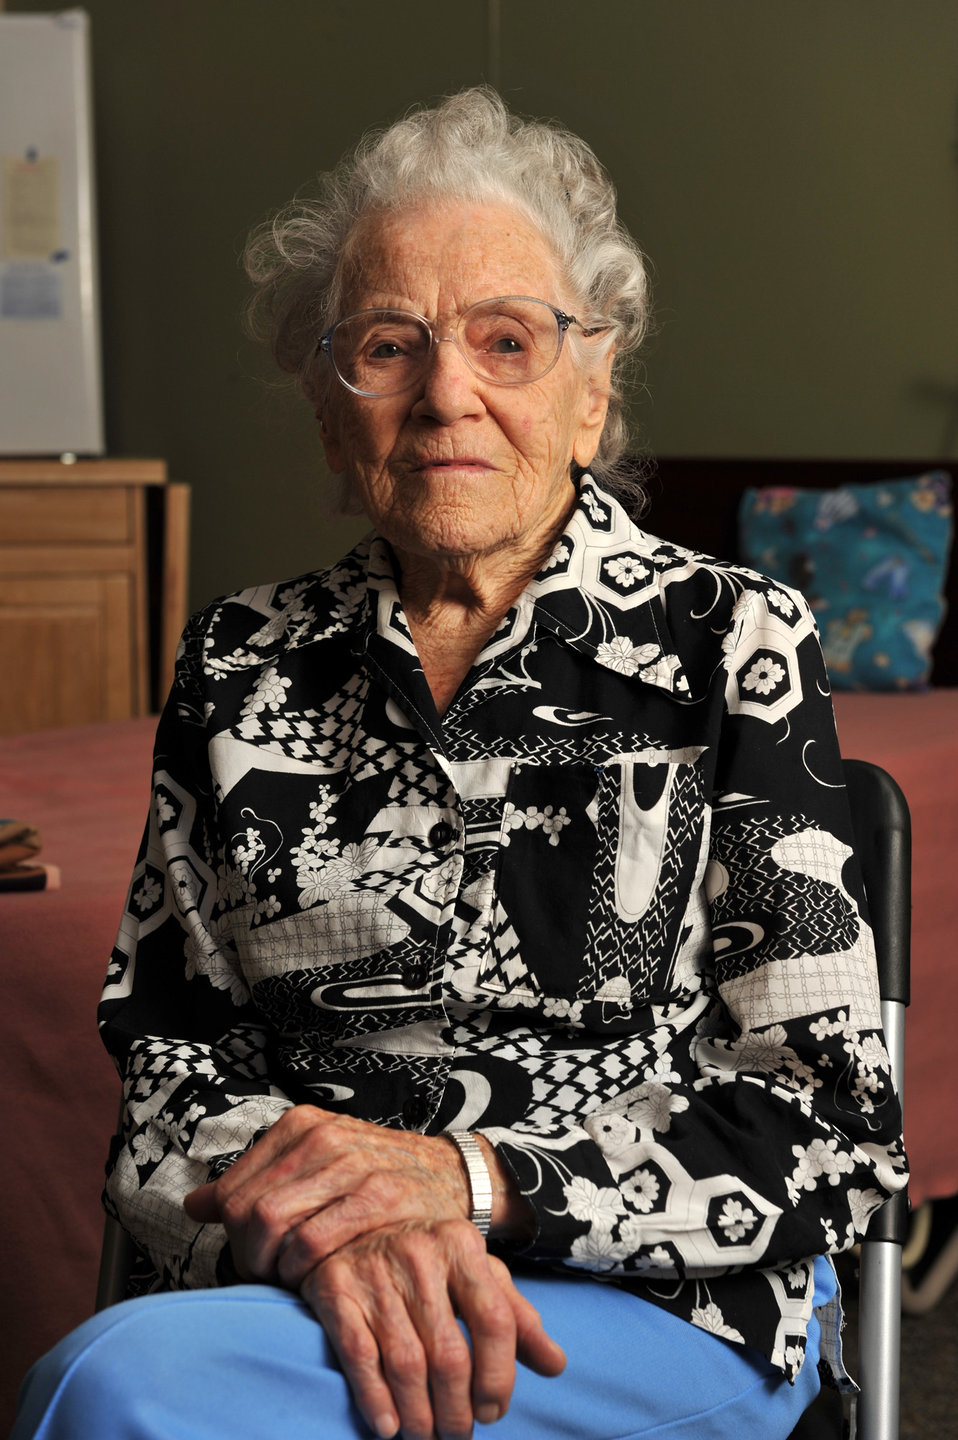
WWII female veteran

At the age of 103, Mildred McDowell is one of the Air Force's oldest female veterans. She resides in Vandalia, Ill.